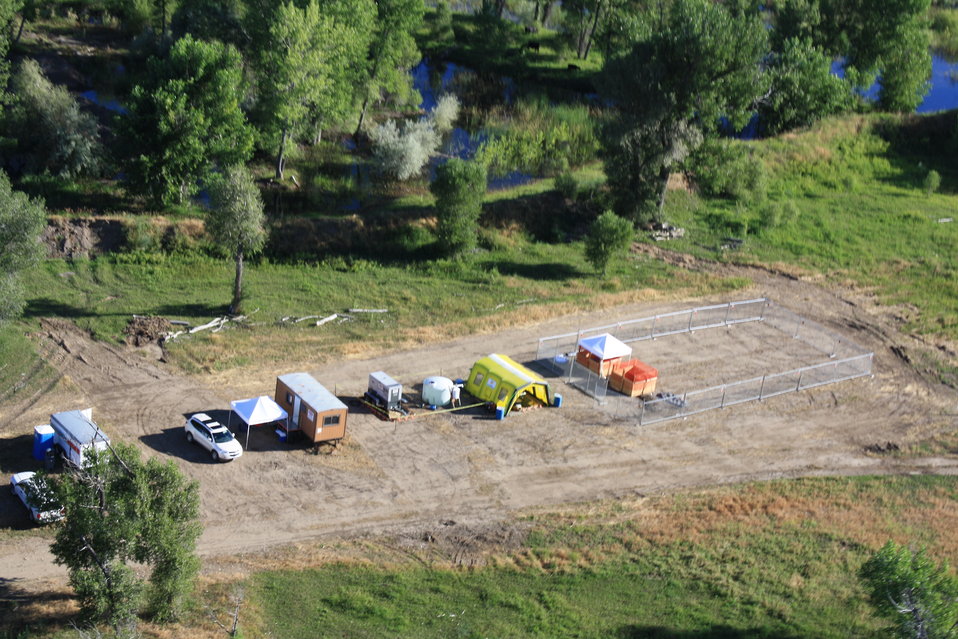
Aerial View of Bird Rehab Center

Early in the response to the Silvertip Pipeline Oil Spill, a bird rehab center was set up to treat incoming wildlife affected by the oil in the Yellowstone River. International Bird Rescue staff captures and treats affected wildlife according to their needs. Whenever possible, every effort is made to release the affected wildlife into suitable, non-oiled habitat as soon as the animal is stable.